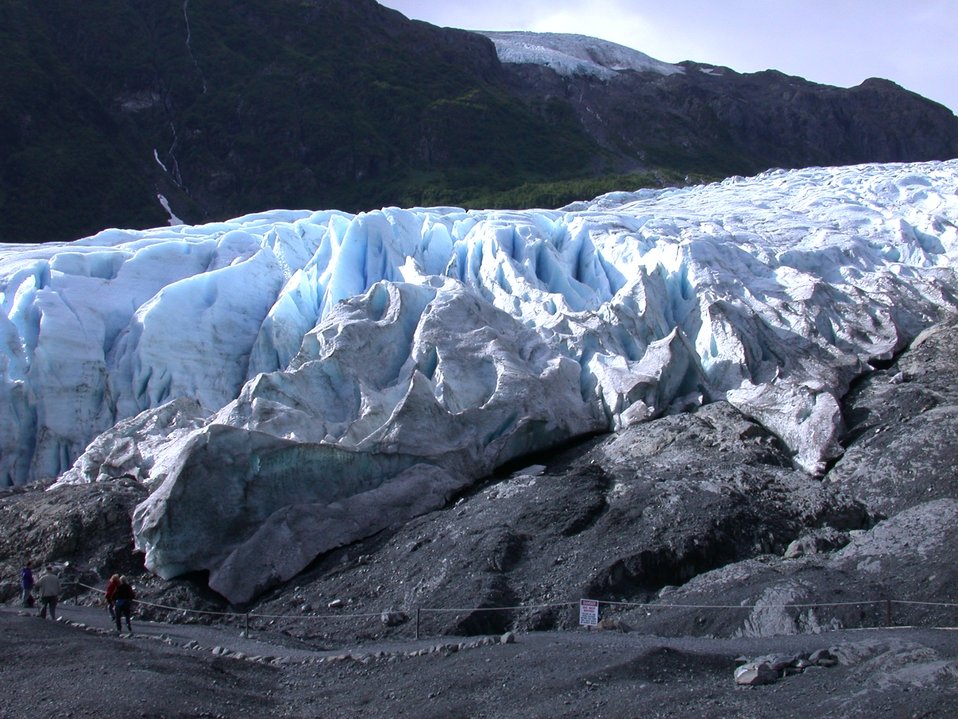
Glacier in Portage area.